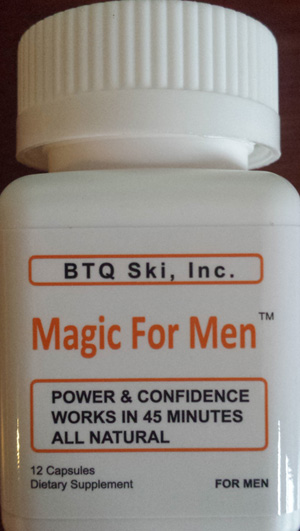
RECALLED – Dietary Supplement for Sexual Enhancement

January 9, 2014 – Product Recall – Midwest Wholesale Issues Voluntary Recall of Boost Ultra, XZone Gold, Sexy Monkey, Triple MiracleZen Platinum, Magic for Men, 'New' Extenze, and New XZen Platinum Marketed as a Dietary Supplements Due to the Presence of Undeclared Drug Ingredients. For additional information, please refer to the company issued press release available on FDA’s web site at www.fda.gov/Safety/Recalls/UCM381299.

And read this Consumer Update: Beware of Fraudulent ‘Dietary Supplements’